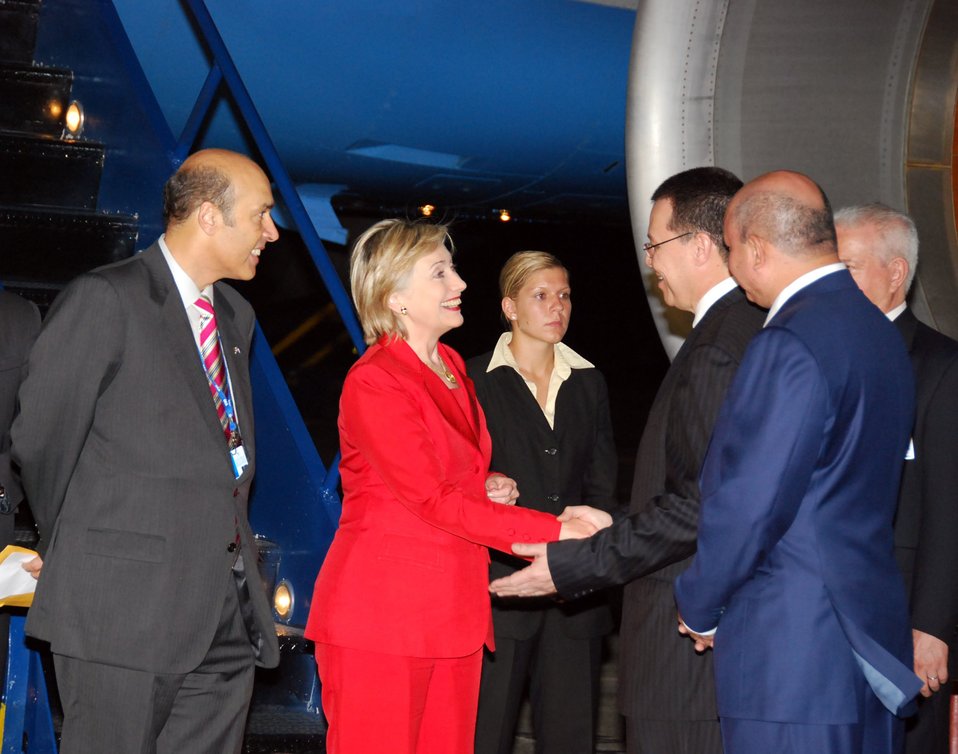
Secretary Clinton Arrives in Honduras

U.S. Secretary of State Hillary Rodham Clinton is greeted by San Pedro Sula Major Rodolfo Padilla Sunseri at her arrival at Armando Escalon Airbase in San Pedro Sula, Honduras, June 1, 2009. From left to right: Ambassador Hugo Llorens, Secretary Clinton, and San Pedro Sula Major Rodolfo Padilla Sunseri.